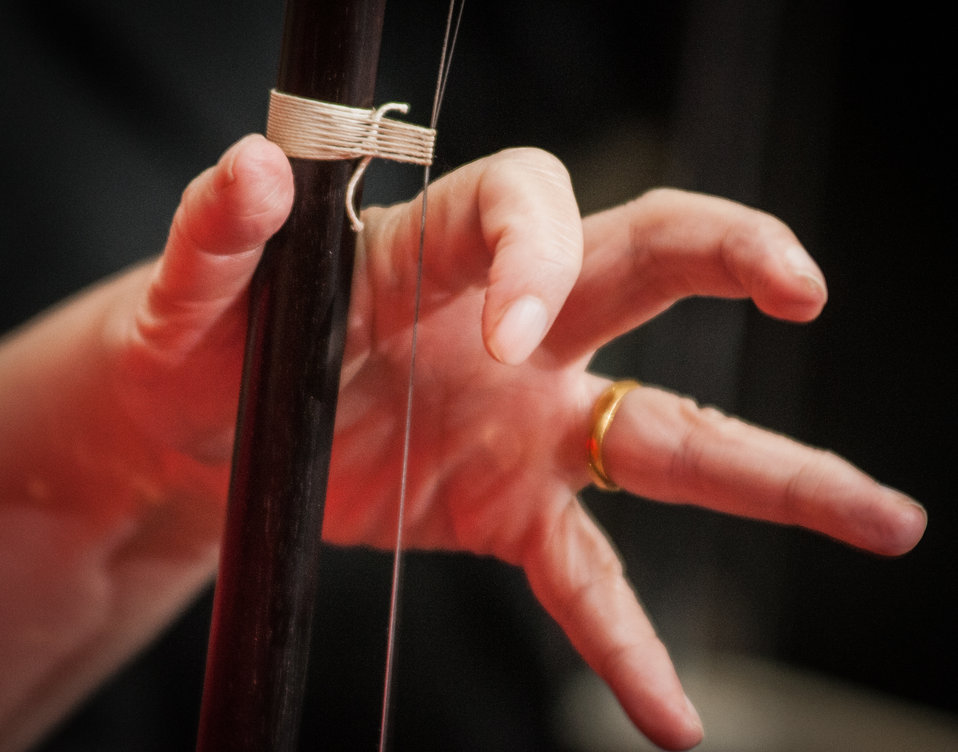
The Washington Chinese Traditional Orchestra Ensemble performs 'Melody of Purple Bamboo,' 'Jasmine Flower,' and 'Joys of Beaming,' during the U.S. Department of Agriculture (USDA) Asian Pacific American Heritage Month Observance, at the USDA headquarters, Whitten Building patio, in Washington, D.C., on Thursday, May 23, 2013. This year’s theme is “Building leadership; Embracing the Cultural Values and Inclusions.”